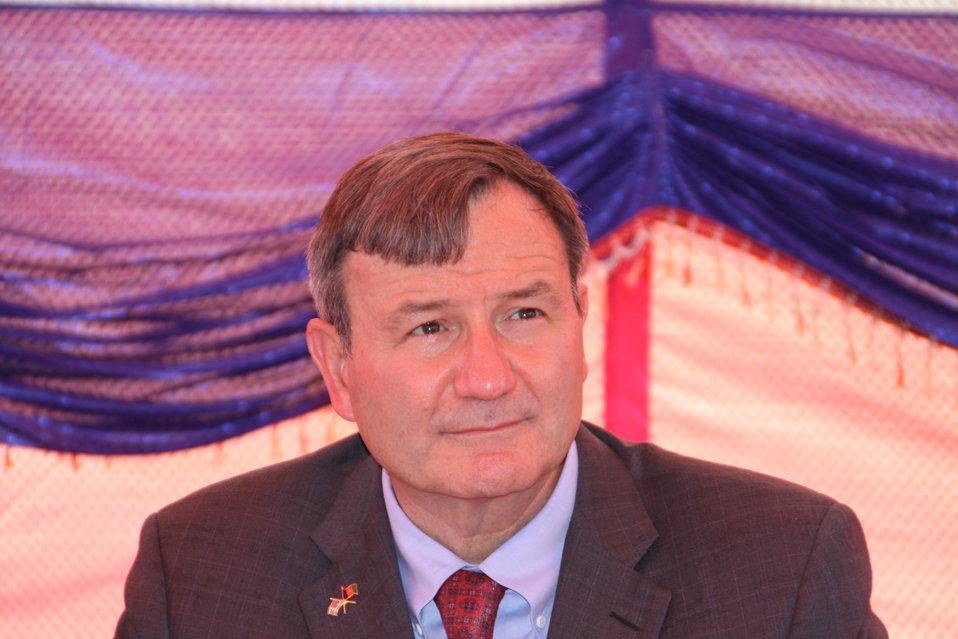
Baddam Bagh Farm